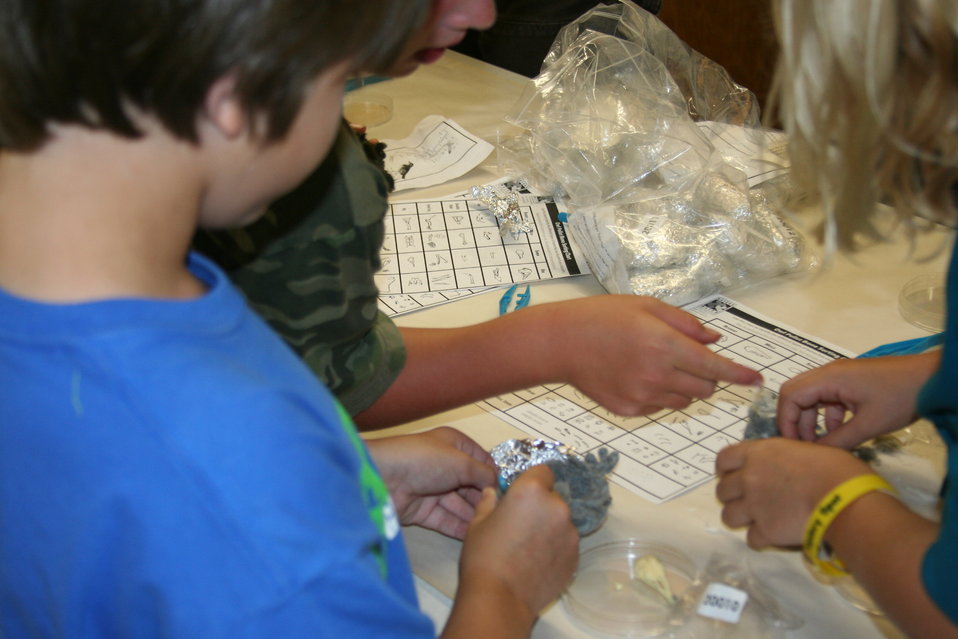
Creatures of the Night 2011